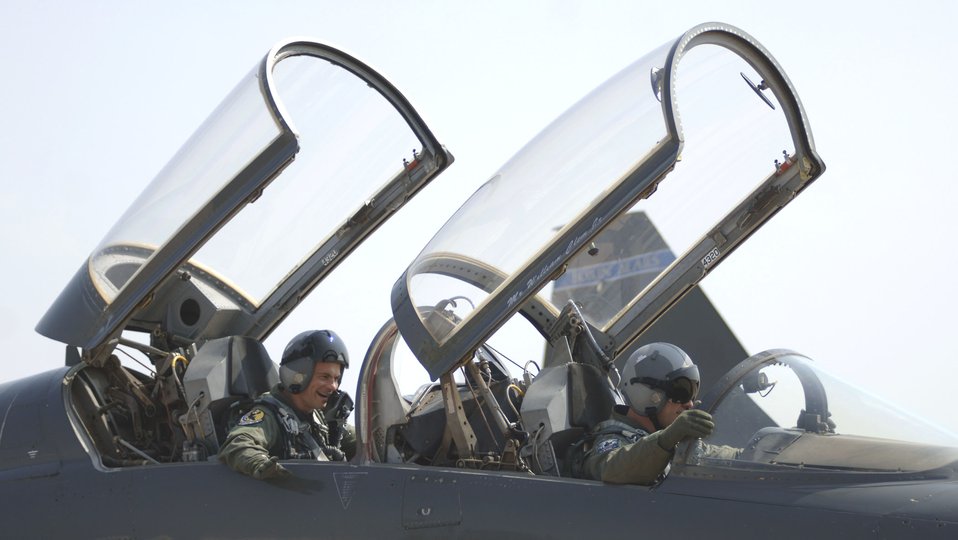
No matter the nationality, pilots speak same language

Capt. Alberto Surace (left) and 2nd Lt. Mathew Spinelli prepare for take-off in a T-38 Talon at Sheppard Air Force Base, Texas, on July 20. Both Captain Surace, of the Italian air force, and Lieutenant Spinelli are students in the Euro-NATO Joint Jet Pilot Training program.